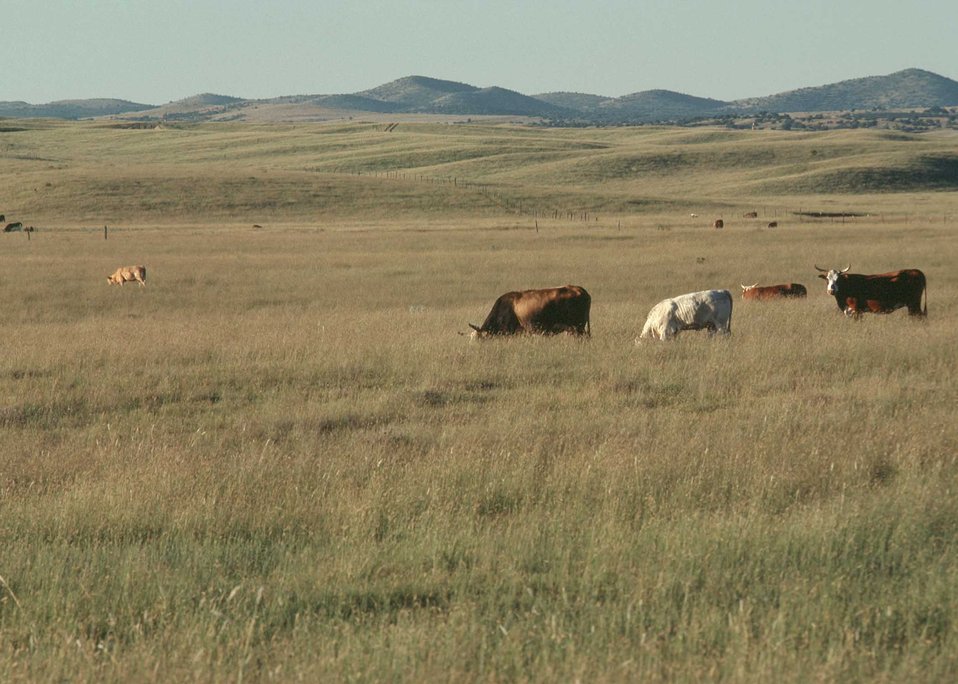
Cattle graze on well-managed rangeland near Tuscon, AZ.